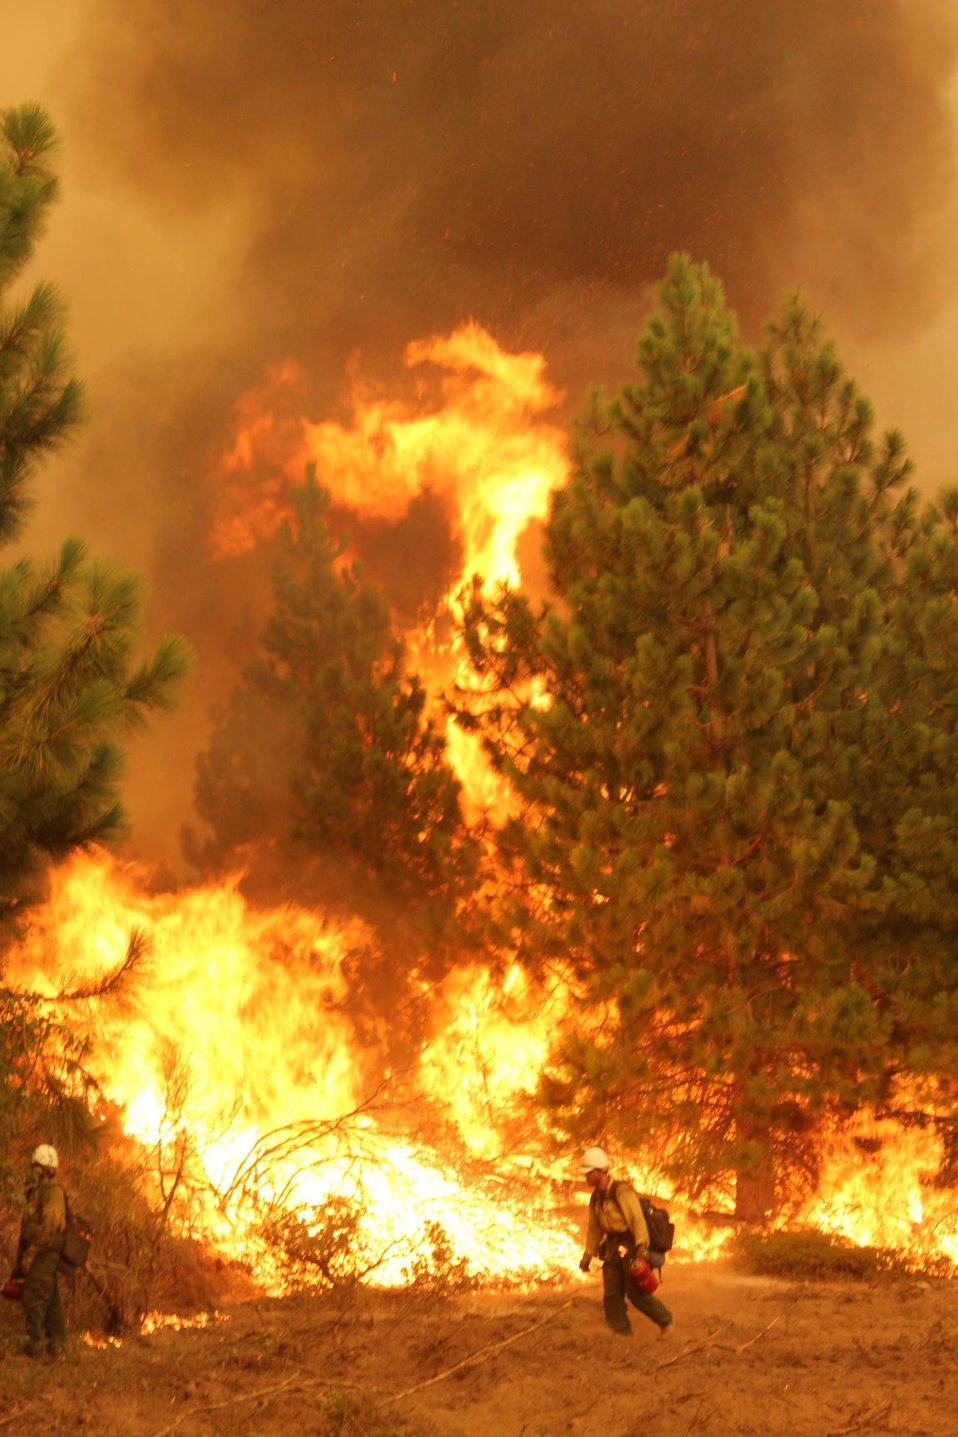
Silver State Hotshots work on the fire line at the Rim Fire. The Rim Fire in the Stanislaus National Forest near in California began on Aug. 17, 2013 and is under investigation. The fire has consumed approximately 235,841 acres and is 70% contained.